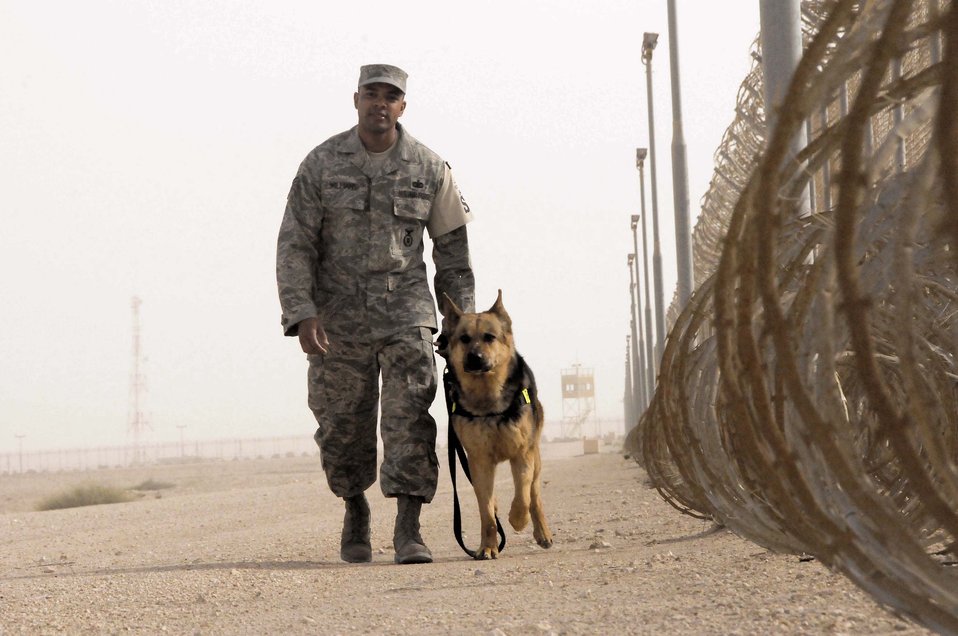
K-9 team keeps crime on a leash

Staff Sgt. Kenneth Williams walks with Bruno, a military working dog, during a perimeter check March 4 in Southwest Asai. Sergeant Williams is a member of the 379th Expeditionary Security Forces Squadron.